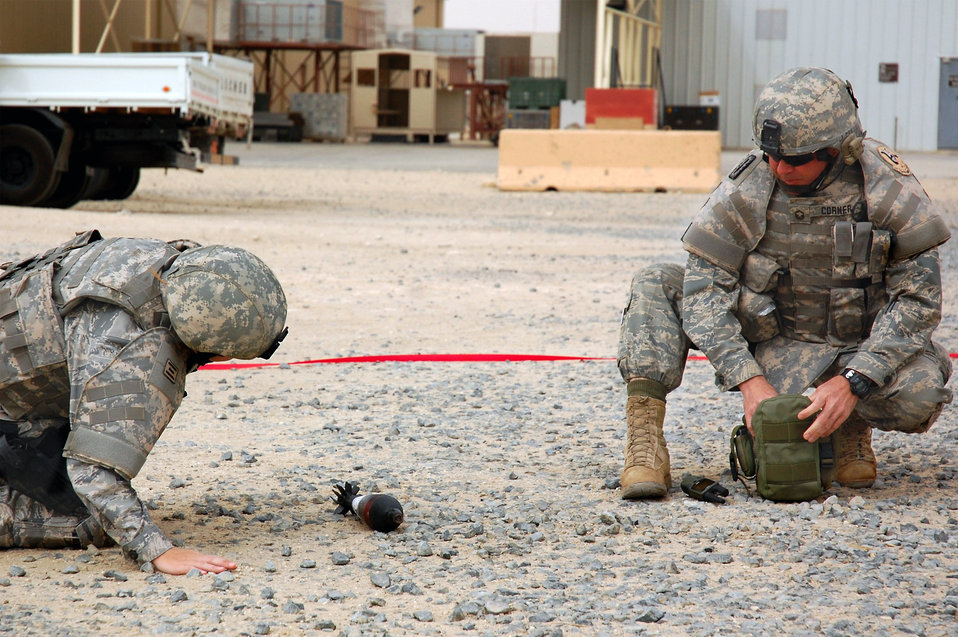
Responders ready for real deal

Airman 1st Class Jessica Ogilbee (left) and Senior Master Sgt. Russell Corner examine a simulated unidentified explosive ordnance during a battle drill April 9 at a Southwest Asian air base. Base members continually test the combat readiness and response capabilities of the Airmen in the wing. Airman Ogilbee and Sergeant Corner are assigned to the the 386th Expeditionary Civil Engineer Squadron Explosive Ordnance Disposal Flight.